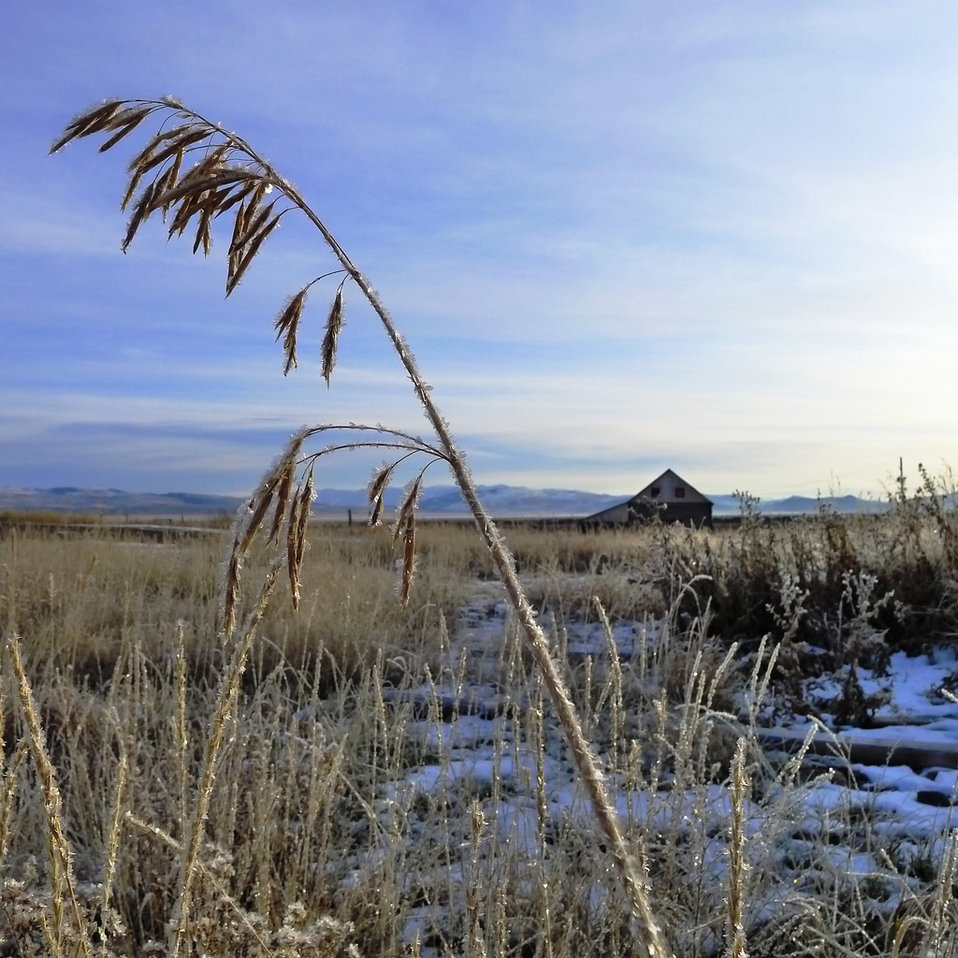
frost and old barn

Red Rock Lakes National Wildlife Refuge, MT